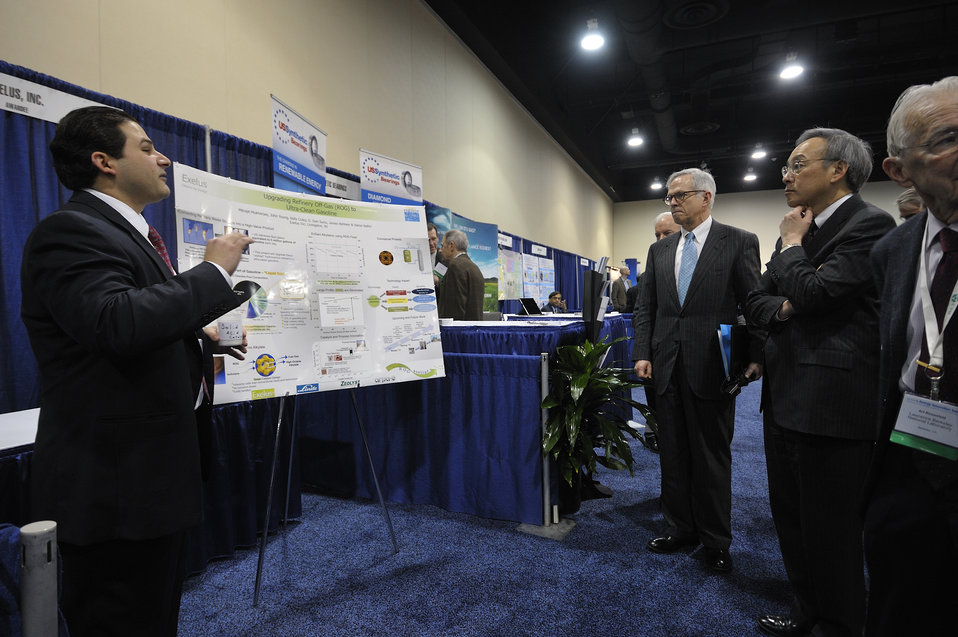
ARPA-E Energy Innovation Summit 2011, 60 of 83

Steven Chu, Secretary, United States Department of Energy speaks with Exelus at the summit's Technology Showcase.